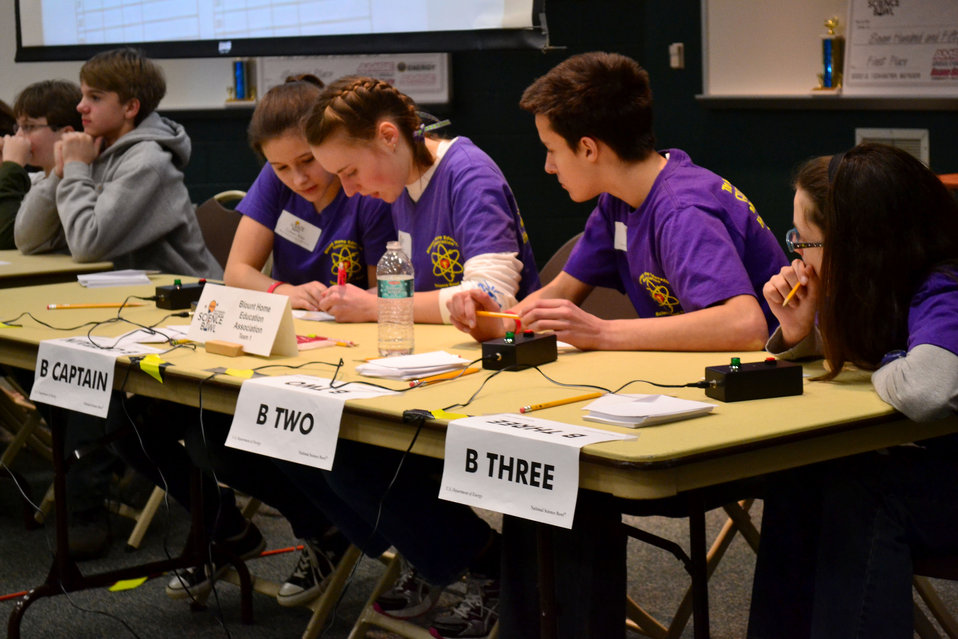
Blount Home Educational Association First Place DOE Tennessee Middle School Science Bowl Oak Ridge

13-008 DOE photo Lynn Freeny DOE Tennessee Middle School Scence Bowl 2-2-2013 Oak Ridge Tennessee